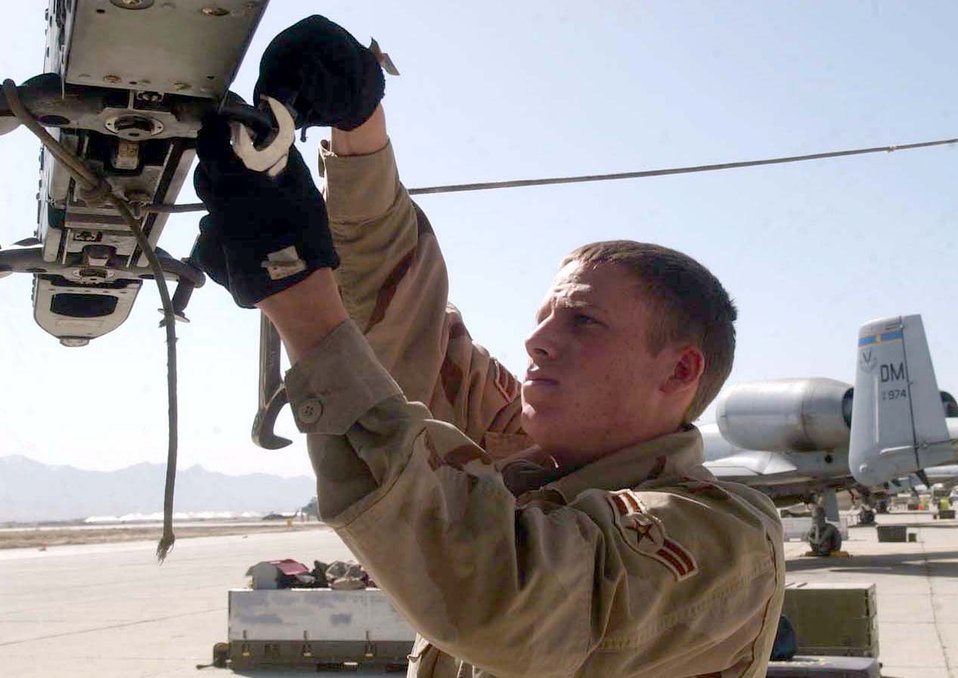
Prep time

BAGRAM AIR BASE, Afghanistan -- Airman 1st Class David Hink prepares an A-10 Thunderbolt II for a flare pod and a mission over Afghanistan. He is a weapons loader assigned to the 455th Expeditionary Operations Group here. Airman Hink is deployed from the 355th Aircraft Maintenance Squadron at Davis-Monthan Air Force Base, Ariz.